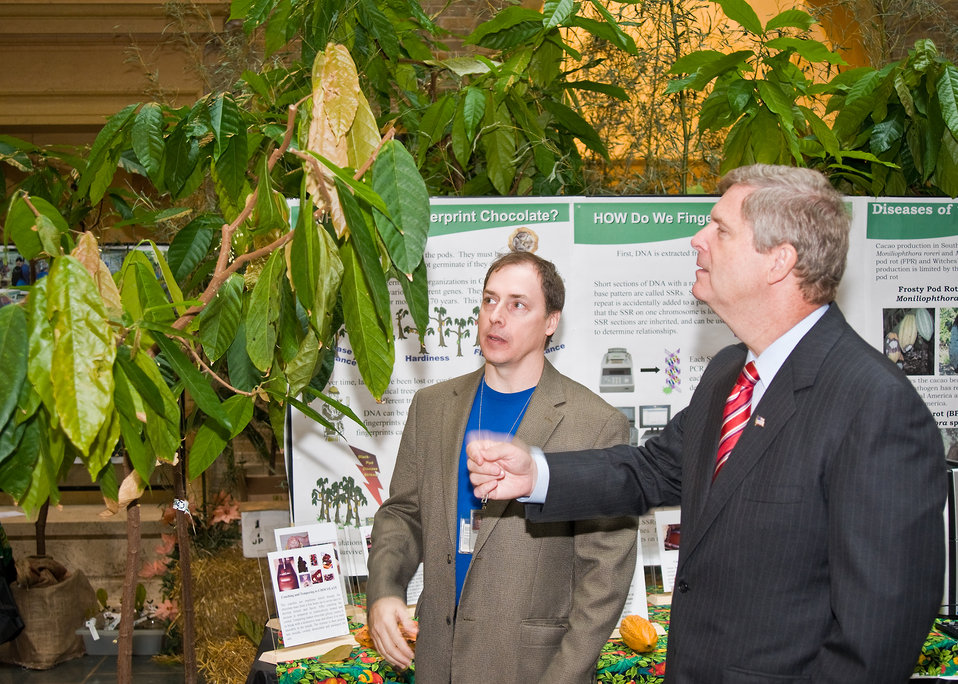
Dr. Lyndel Meinhardt (left) , Research Leader, Sustainable Perennial Crops Laboratory, Beltsville Agricultural Research Center, Beltsville, Maryland presents a cacao tree to Agriculture Secretary Tom Vilsack (right) at the, ' Celebrating Science: Bed Bugs...Chocolate...and Beyond' event held a the United States Department of Agriculture in Washington, DC, on Monday, October 4, 2010. The Sustainable Perennial Crops Laboratory studies diversity of the cacao tree to maintain the natural aspects of the tree. USDA Photo 10di1515-12 by Bob Nichols.